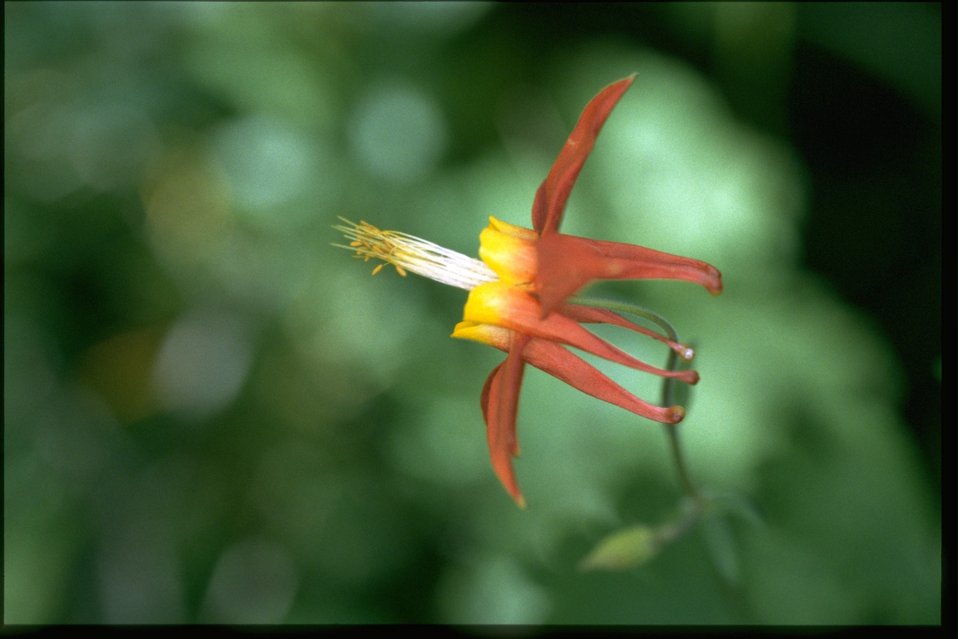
Closeup shot of Aquilegia formosa.